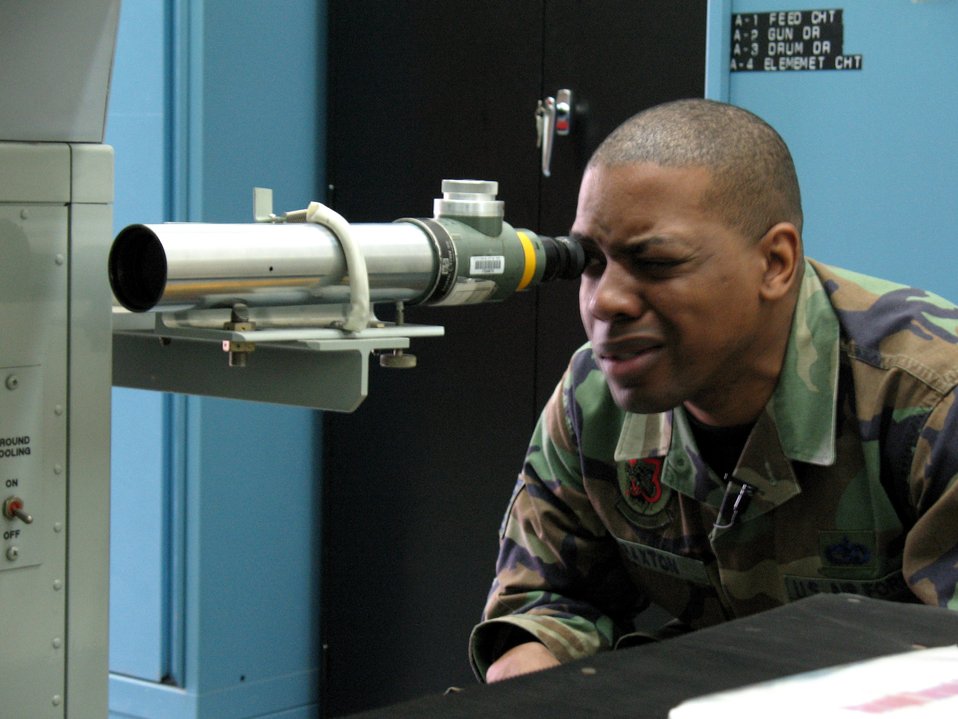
Weapons Airmen help pilots' firing accuracy

Tech. Sgt. Lawrence Braxton looks through a boresight telescope April 5 at Misawa Air Base, Japan. He watches the crosshairs inside and instructs another Airman where to move the collimeter to get the F-16 Fighting Falcon gun alignment within tolerance levels. Sergeant Braxton is assigned to the 13th Fighter Squadron at Misawa AB.